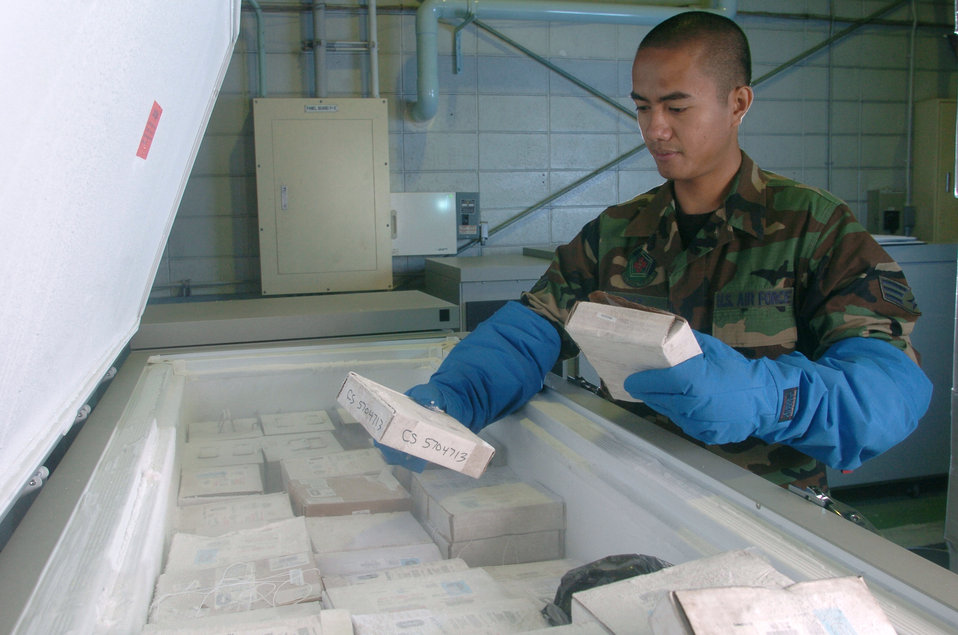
Airmen ensure medical lifeline in Pacific

YOKOTA AIR BASE, Japan -- Senior Airman Al Diaz stores boxes of blood inside a freezer in a warehouse here. The blood supply is part of war reserve materiel kept for military combat and contingency operations. Airman Diaz is a medical logistics technician from the 374th Medical Group.